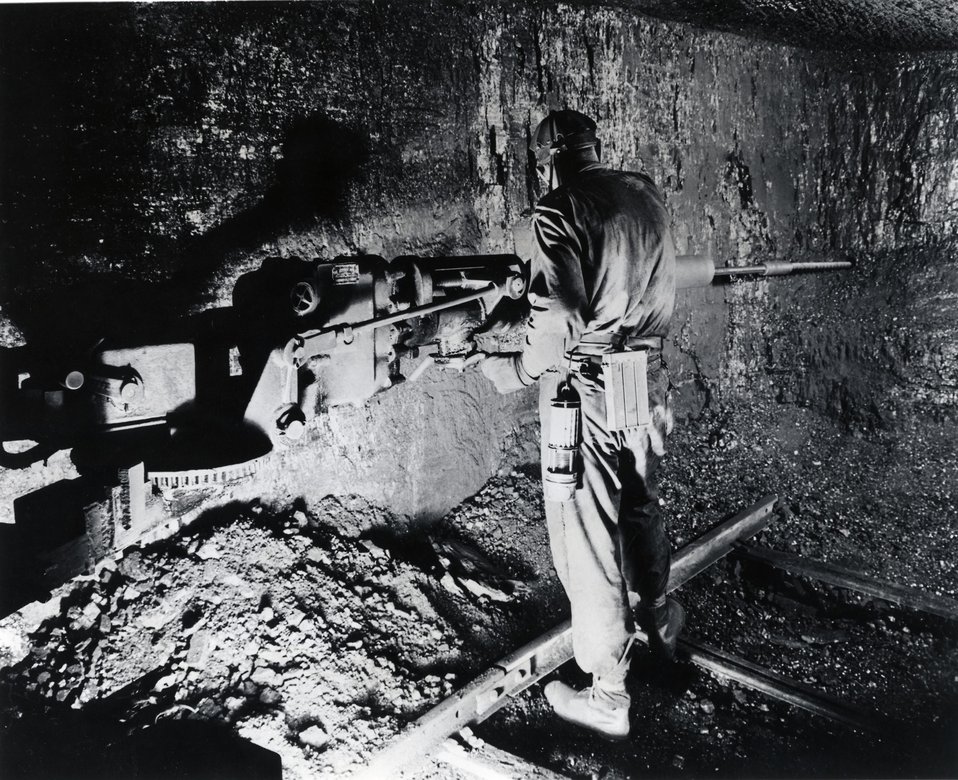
Drilling into the face of the coal vein with electrically-driven machine is another important step in mechanized coal mining. c. 1952